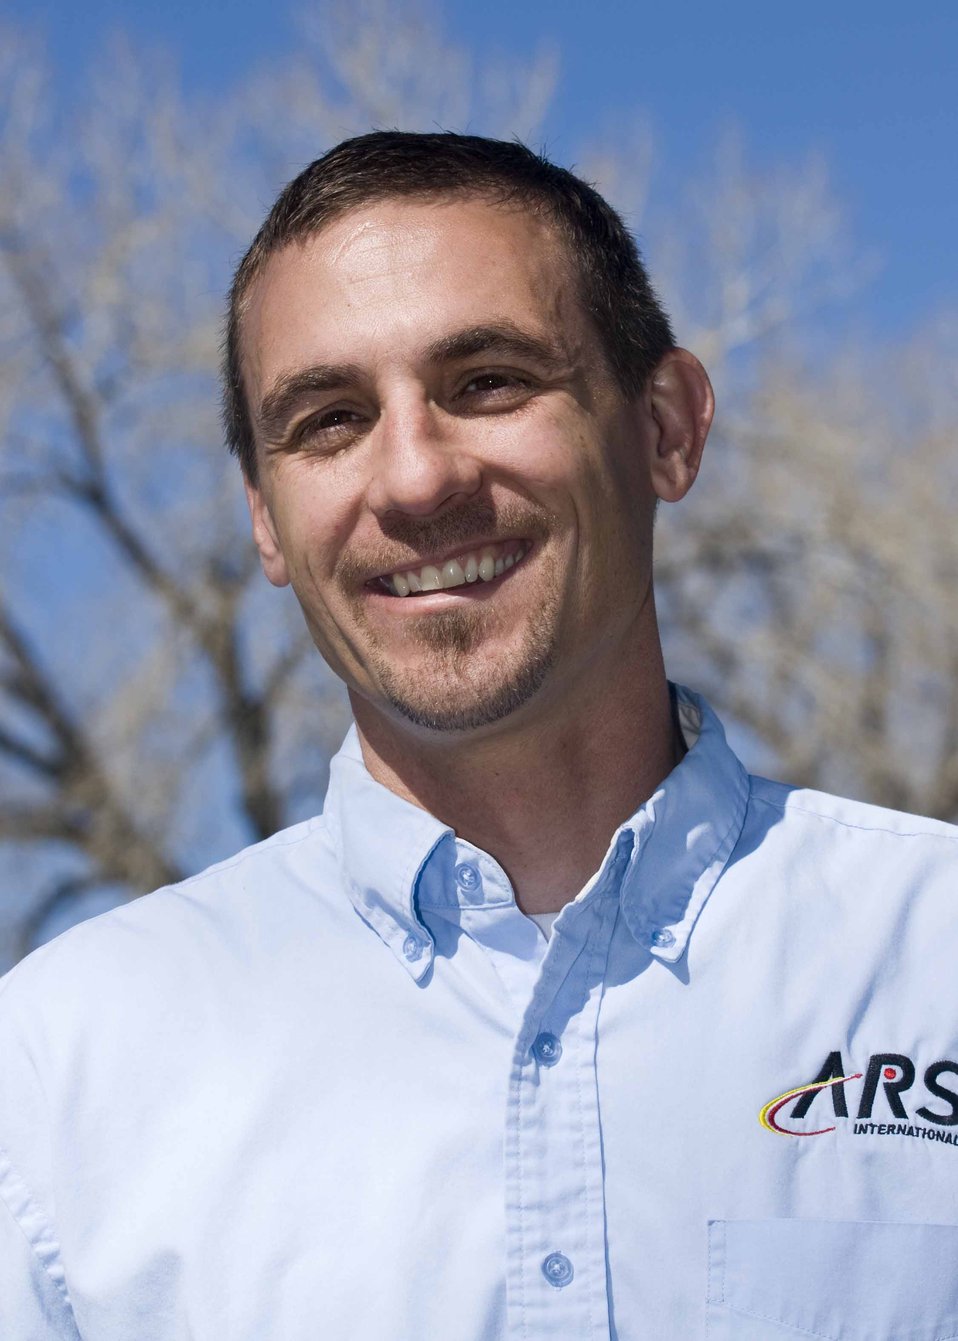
Pete Stilwell - LANL

Pete Stilwell says Recovery Act work has created jobs for workers and had a positive impact on his company.